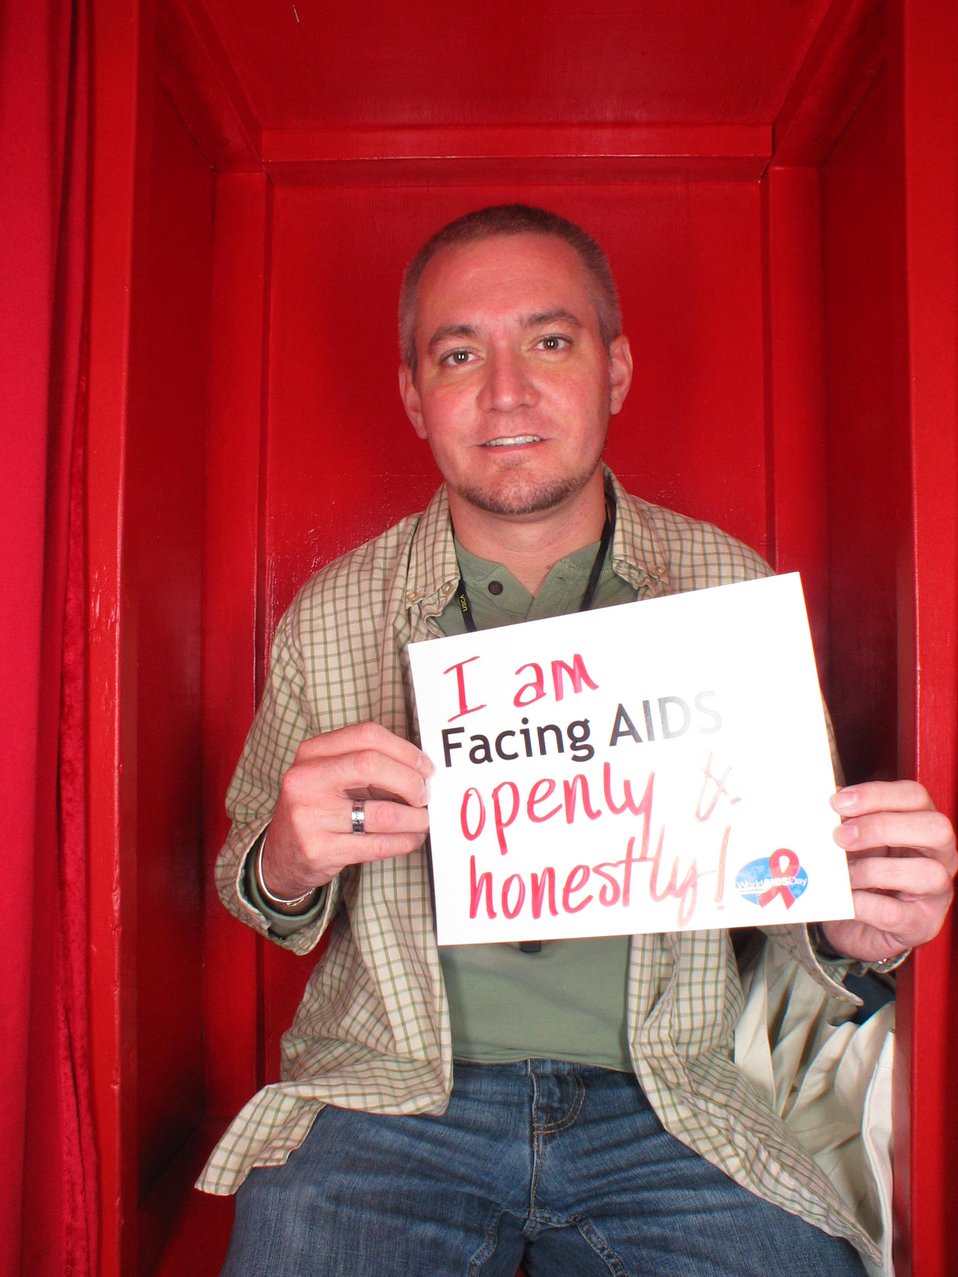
I am Facing AIDS openly and honestly